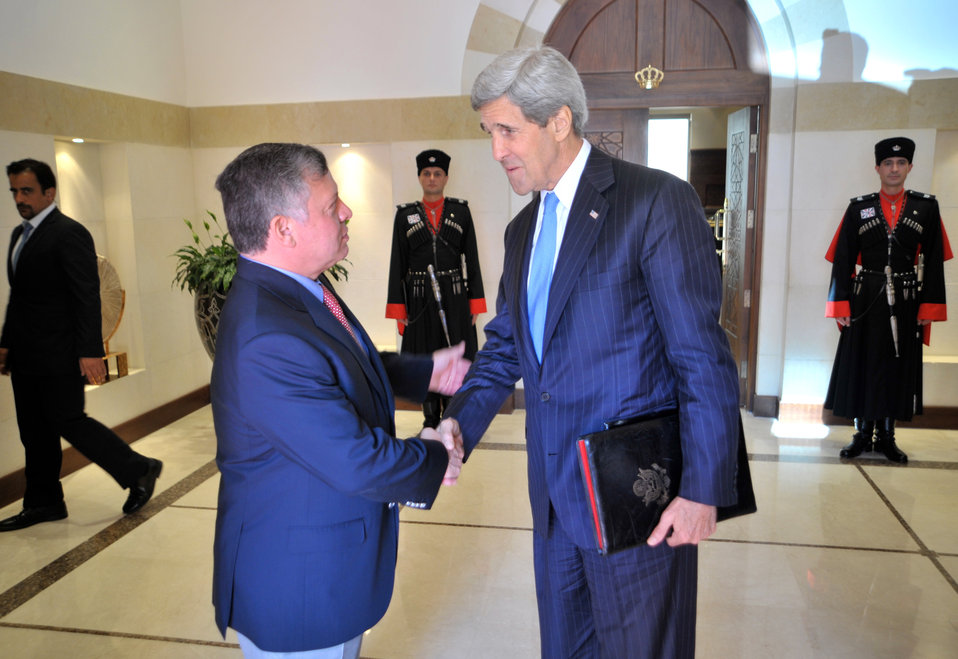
Secretary Kerry Bids Farewell to King Abdullah II

U.S. Secretary of State John Kerry says goodbye to King Abdullah II following a meeting at Al-Hummar Palace in Amman, Jordan, on June 27, 2013.